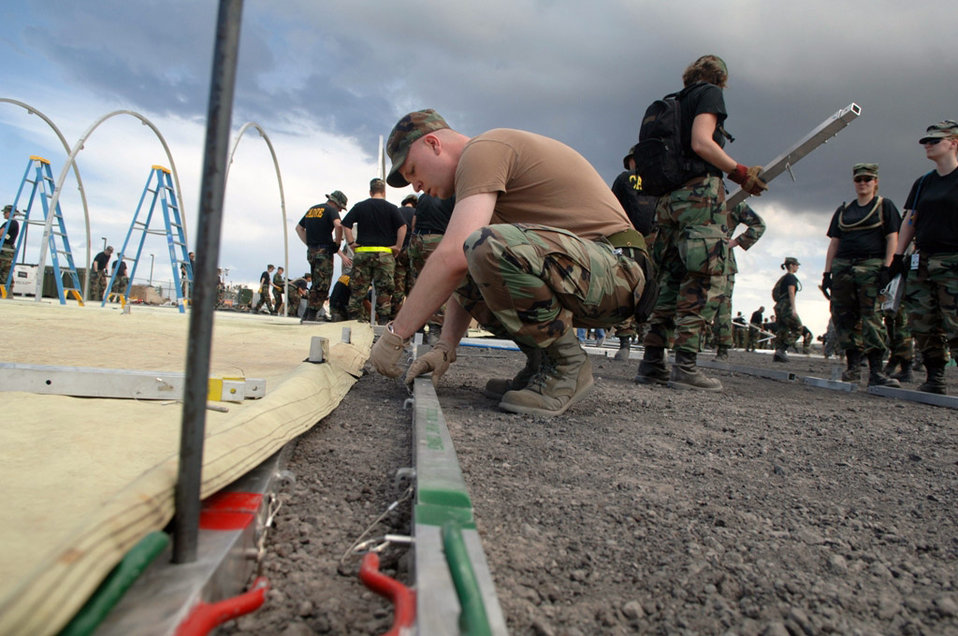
Airmen build mobile medical facilty

Staff Sgt. Frank O'laughlin secures the beams that support the foundation of a fully operational mobile hospital at the Kona International Airport Jan. 29. Sergeant O'laughlin and other members of the 3rd Expeditionary Medical Support unit at Elmendorf Air Force Base, Alaska, were taking part in the Pacific Air Forces first-ever total force humanitarian assistance and disaster relief exercise, known as Pacific Lifeline. The exercise ends Feb. 9.